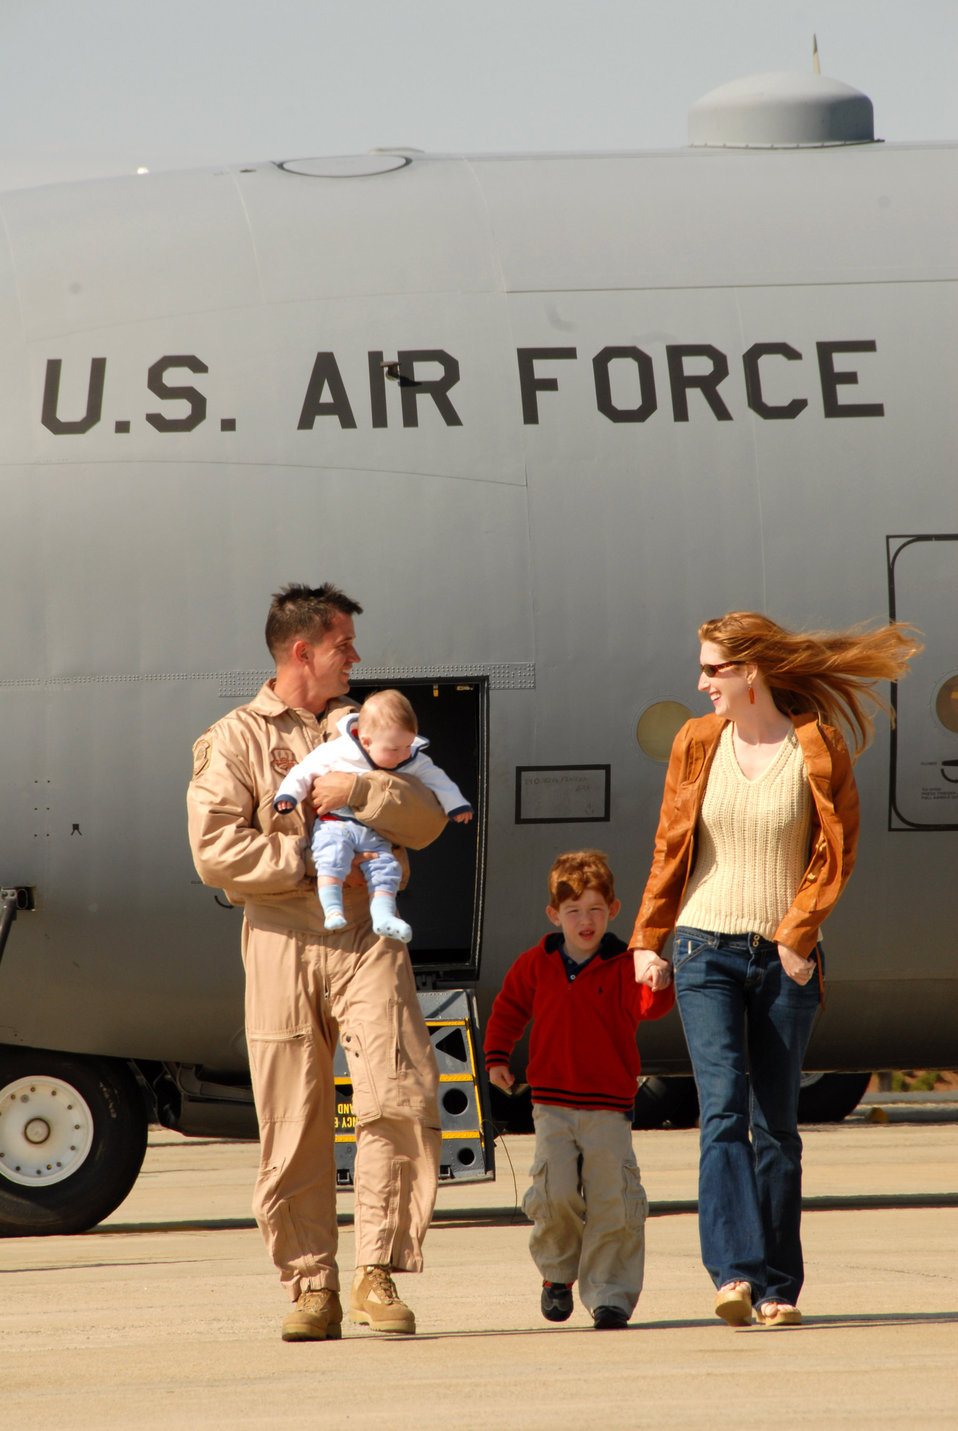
Nothing can be finer than to be in Carolina

Maj. Kevin Mountcastle talks with his family after giving them a tour of a C-130 Hercules after arriving back home April 6 from supporting Operation Enduring Freedom to Charlotte, N.C. Major Mountcastle is a C-130 Hercules pilot assigned to the 145th Airlift Wing for the North Carolina Air National Guard, and is returning from a tour of duty in Afganistan.